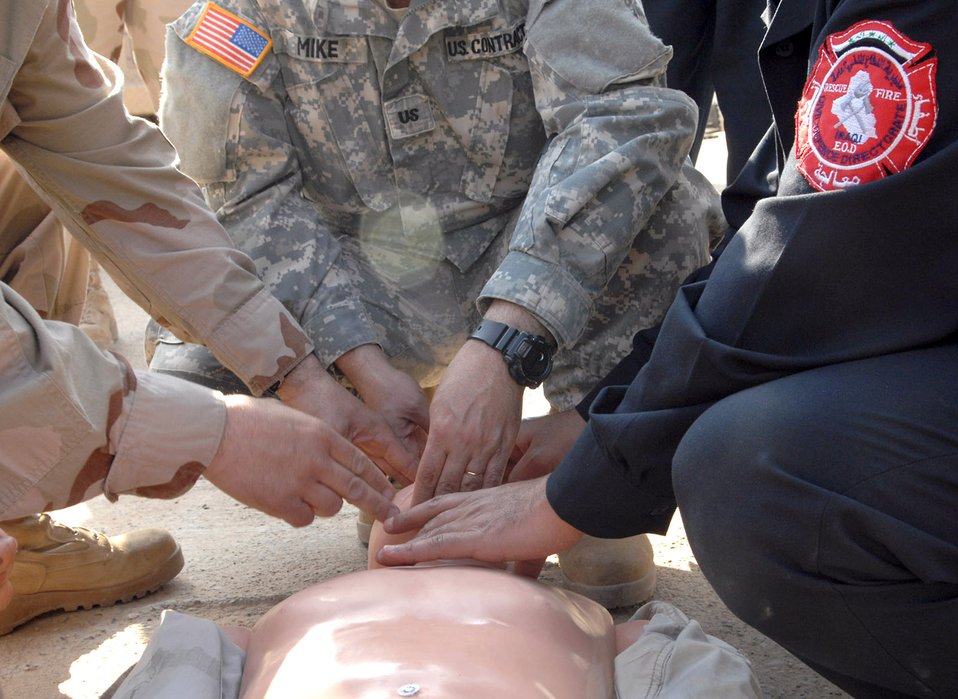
Airmen train Iraqi firefighters for improved regional safety

An Airman, Department of Defense contractor and Iraqi firefighter combine efforts to provide simulated CPR on a manikan Feb. 27 at Kirkuk Air Base, Iraq. The course is part of an ongoing program to help Kirkuk improve fire response efforts.